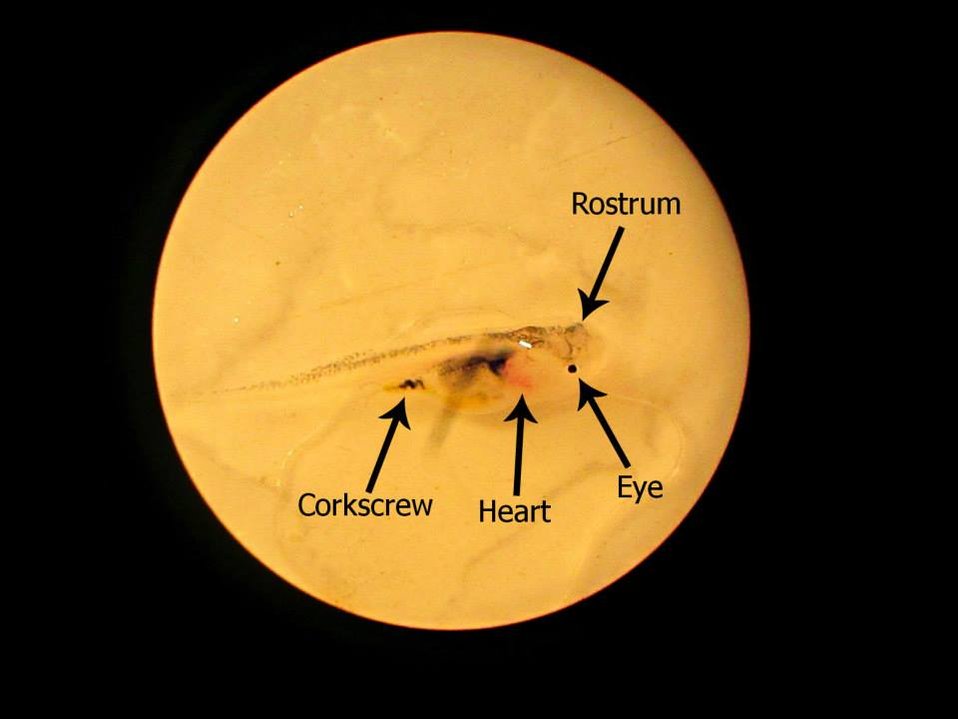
Detailed Paddlefish Fry

Here is a more detailed look at our baby paddlefish.

The top arrow shows the beginning stages of the paddlefish's famous bill. It will get more defined in a few weeks, but for now this guy looks like any other ordinary fish. The eyes are the size of a needle right now, it is hard to imagine what their vision is at this stage. The pink spot is the paddlefish's heart, it pumps furiously under the microscope. The 'corkscrew' is actually called the melanine plug. It is an indicator for us when the fish are ready to feed. About two-three weeks after birth, the plug will disappear and free up the digestion of food.